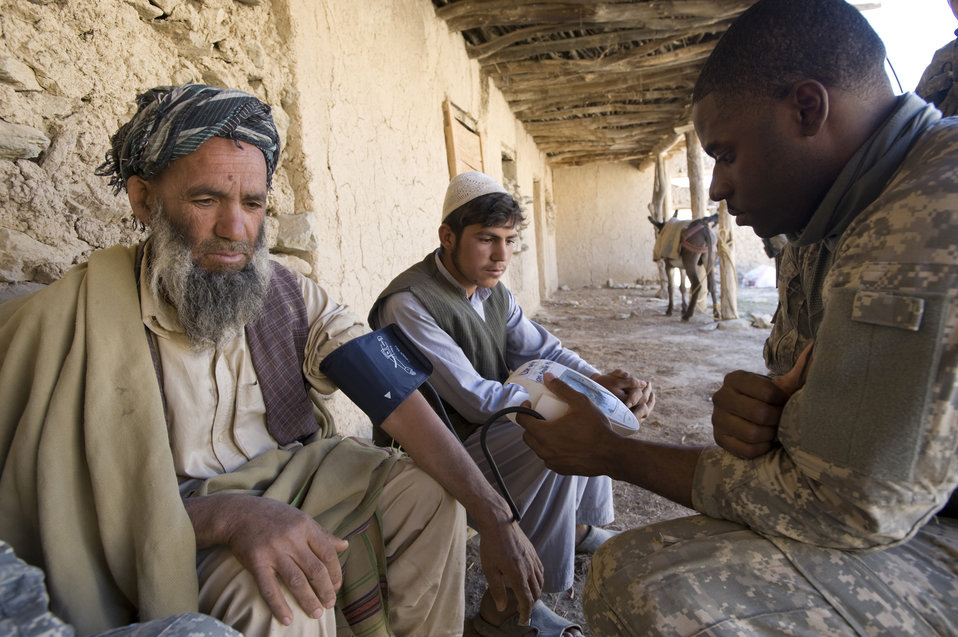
Operation Enduring Freedom

Senior Airman Courtney Thompson examines an Afghan man at a village medical outreach clinic in the small, mountainous village of Pacha Hawk, Afghanistan. The event, two months in the making, brought a 40-person, joint-service team to the remote, mountain-top village. Airman Thompson is a Kapisa and Parwan Provincial Reconstruction Team medic.